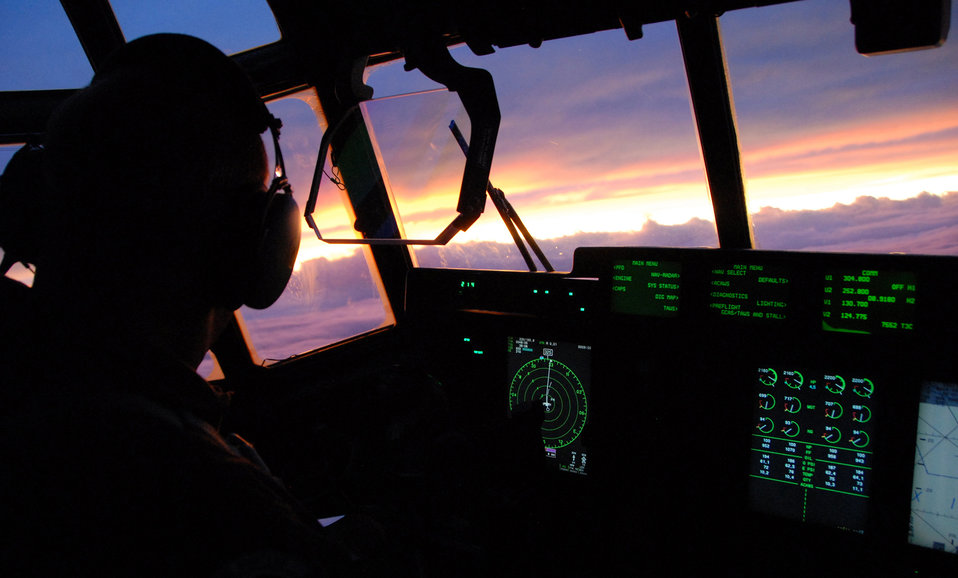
A peaceful day

Lt. Col. Mark Carter views the sunset from a WC-130 cockpit after nine hours of flying into a hurricane over the Gulf of Mexico. The Hurricane Hunters of the Air Force Reserve Command's 403rd Wing at Keesler Air Force Base, Miss., fly 24-hours-a-day, collecting data inside the heart of Mother Nature's fury. The data collected by the Hurricane Hunters improve the National Hurricane Center forecast by 30 percent.